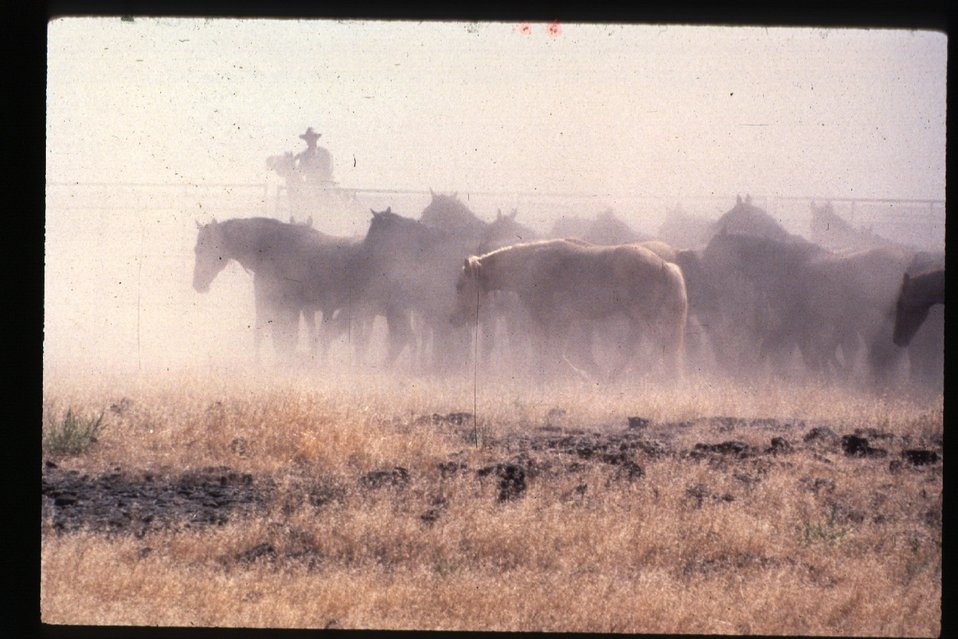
Wild Horse and Burro roundup Vale District Oregon LSRD Lower Snake River District